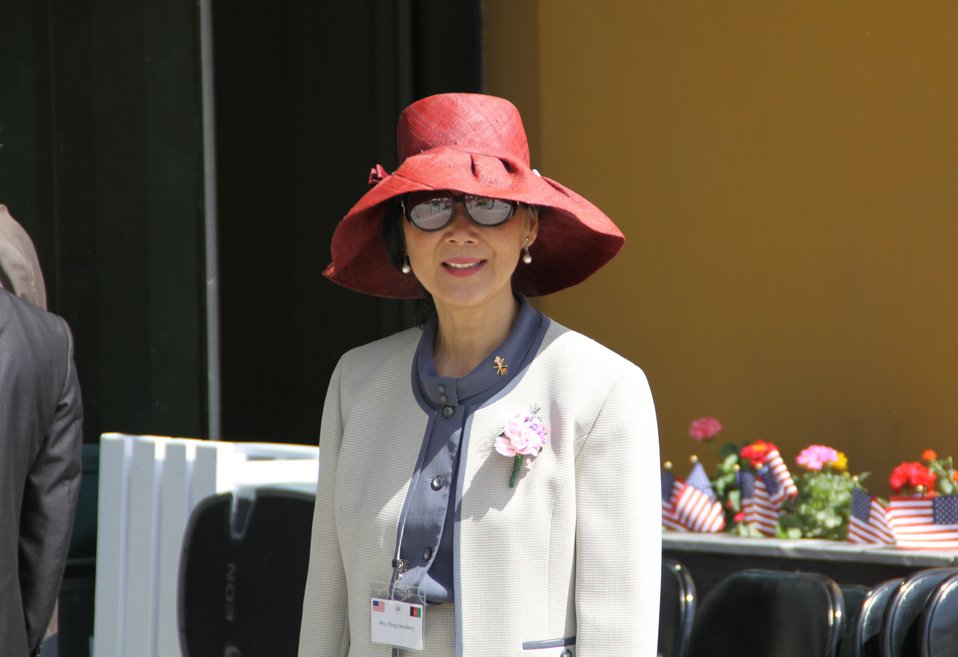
Kabul Official July 4th Celebration